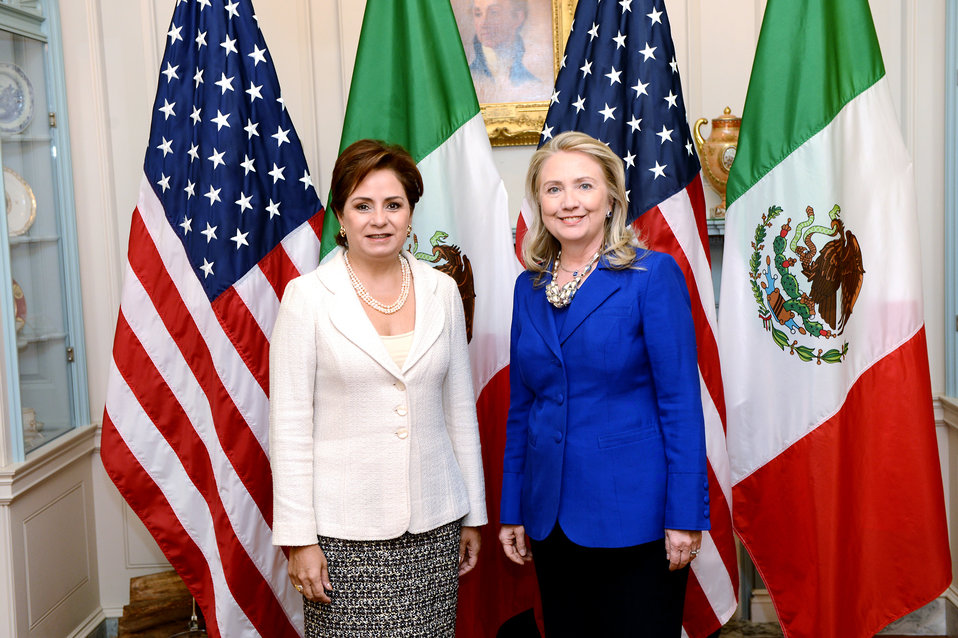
Secretary Clinton and Mexican Foreign Relations Secretary Espinosa Pose for a Photo

U.S. Secretary of State Hillary Rodham Clinton and Mexican Secretary of Foreign Relations Patricia Espinosa participate in the Merida High-Level Consultative Group on Bilateral Cooperation Against Transnational Organized Crime at the U.S. Department of State in Washington, D.C., September 18, 2012.